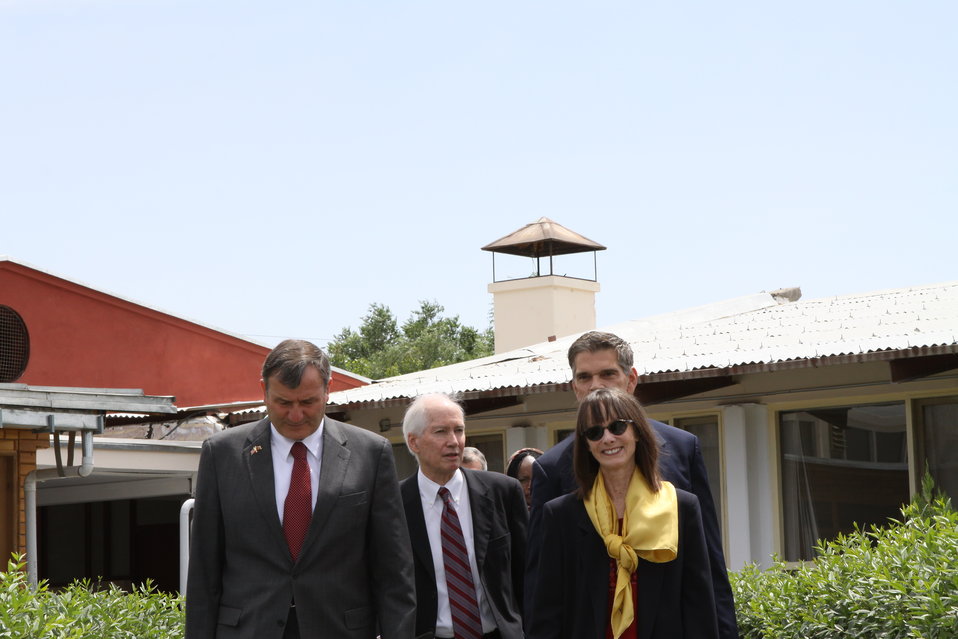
100526 AUAF Graduation 023